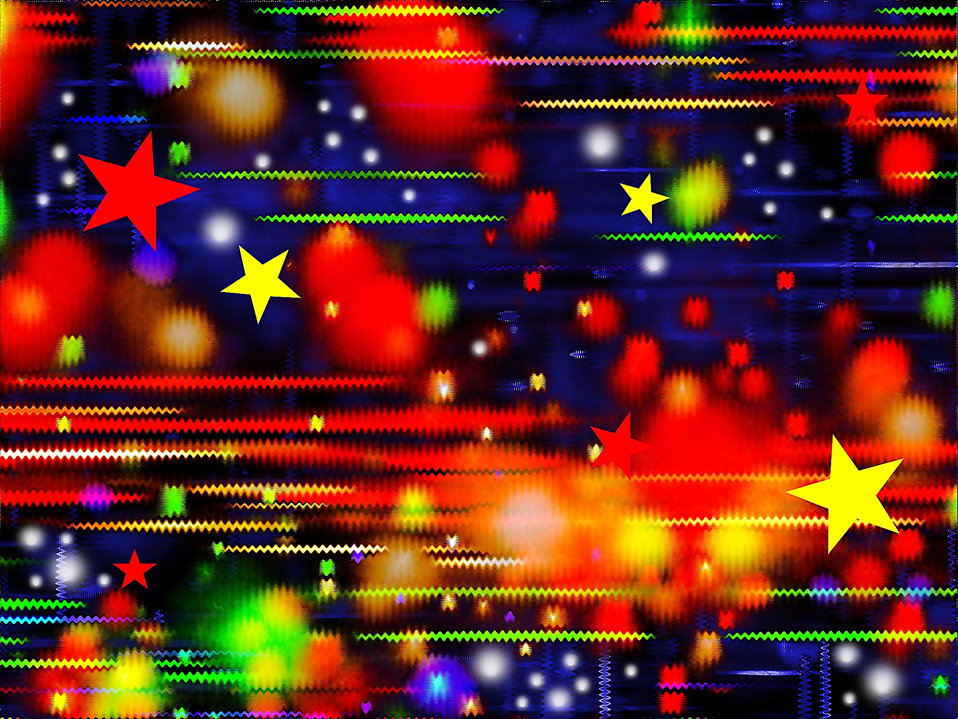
Paulino night

Background.